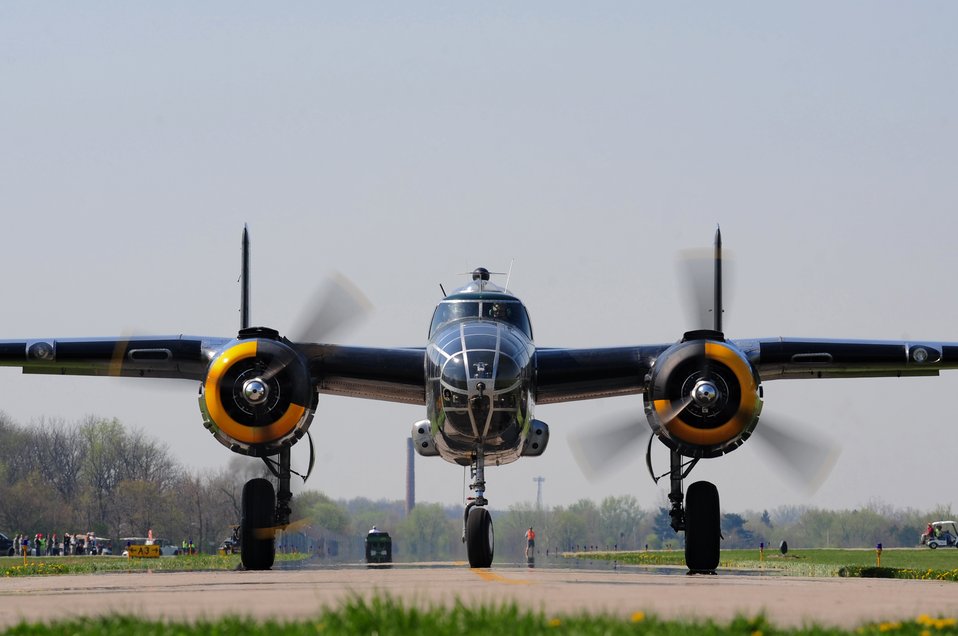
68th Doolittle Raiders Reunion

The